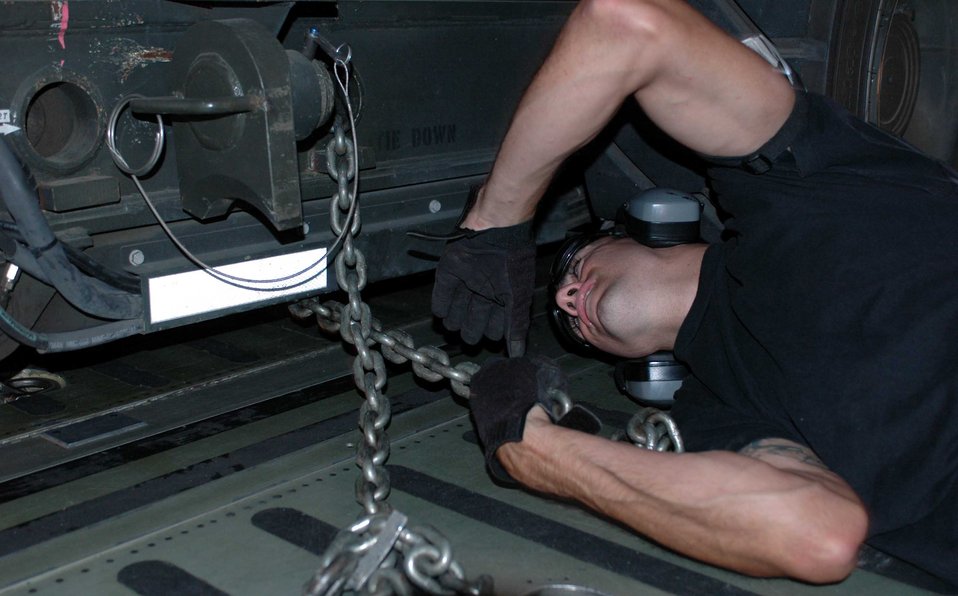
Loading up for Rodeo

Airman 1st Class Dan Levindofske secures a K-Loader to a C-5 Galaxy during an engine running on (and) offload practice June 11 at Travis Air Force Base, Calif. The practice is part of the 60th Aerial Port Squadron's preparations for the 2007 Air Mobility Command's Expeditionary Rodeo to be held in July at McChord AFB, Wash.